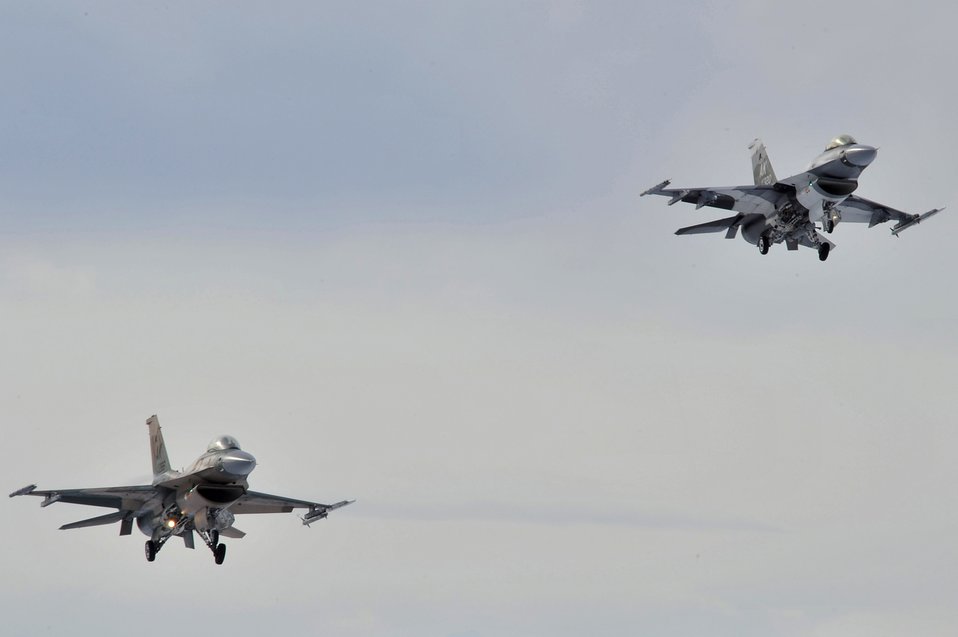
F-16s at Eielson

Two F-16 Fighting Falcons fly April 8, 2011, above Eielson Air Force Base, Alaska.